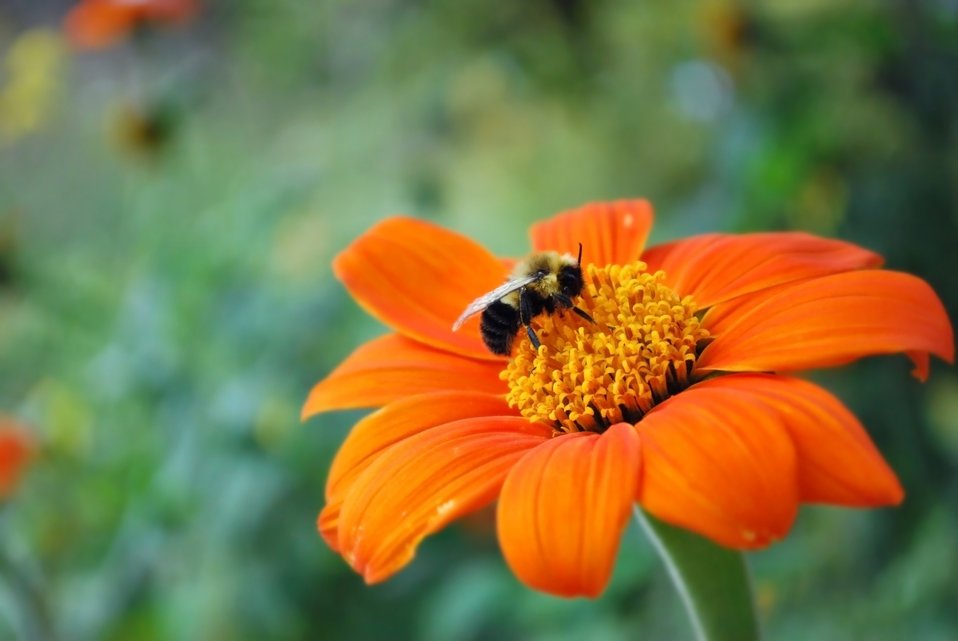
Bee on a beautiful orange flower

Closeup of a bee resting on a lovely orange flower.